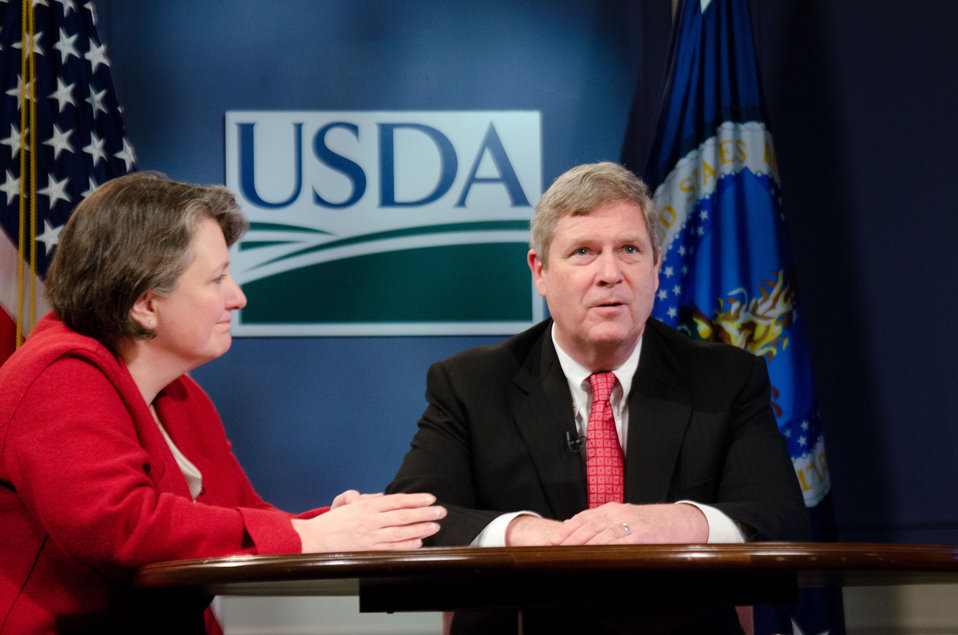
Agriculture Secretary Tom Vilsack and Agriculture Deputy Secretary Kathleen Merrigan unveiled the Know Your Farmer, Know Your Food (KYF) Compass, an interactive web-based document and map highlighting USDA support for local and regional food projects and successful producer, business and community case studies. While hosting a live webinar to highlight USDA's work over the past three years, the Secretaries emphasized how local and regional food systems across the country create additional economic opportunities for farmers, ranchers and food entrepreneurs, expand healthy food access and meet growing customer demand. At the U.S. Department of Agriculture in Washington, D.C. on Wednesday, February 29, 2012.